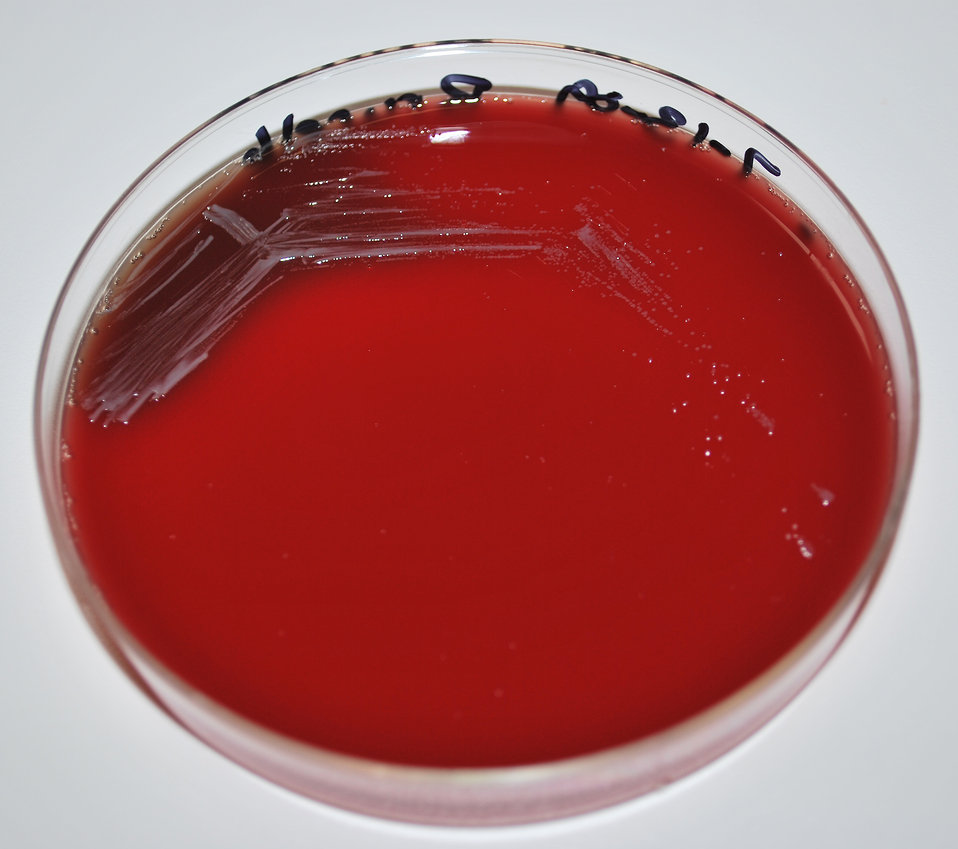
This image depicts the colonial morphology exhibited by colonies of Brucella abortus bacterial, which had been cultivated on sheep's blood agar (SBA), for a period of 48 hours.Infectious Agent